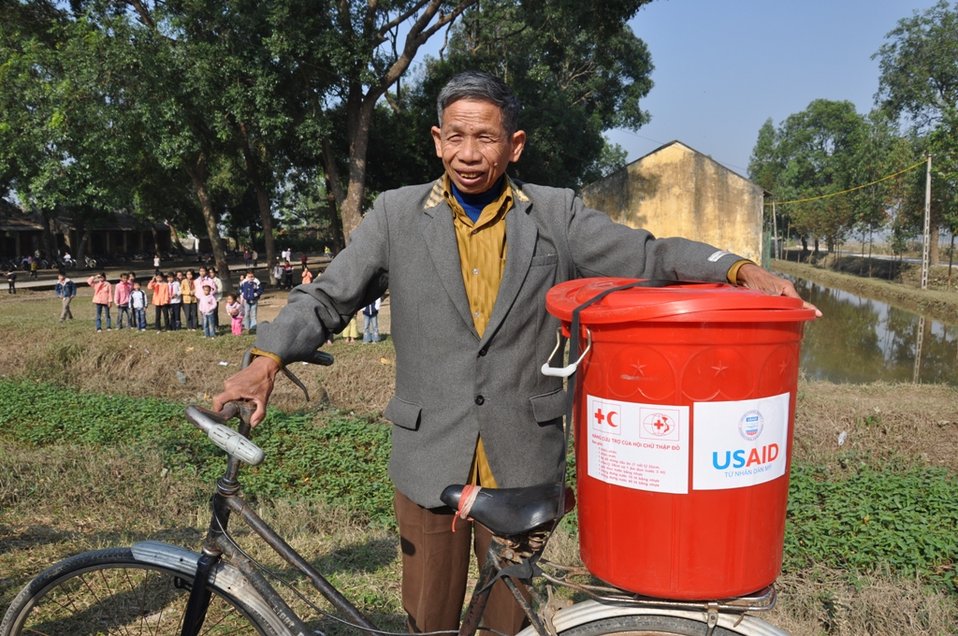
USAID provides humanitarian assistance in Vietnam

Nguyen Van Luong of Vietnam's northern Lien Chau commune receives a household kit with a mosquito net and water purification equipment to help cope with flooding in his area.